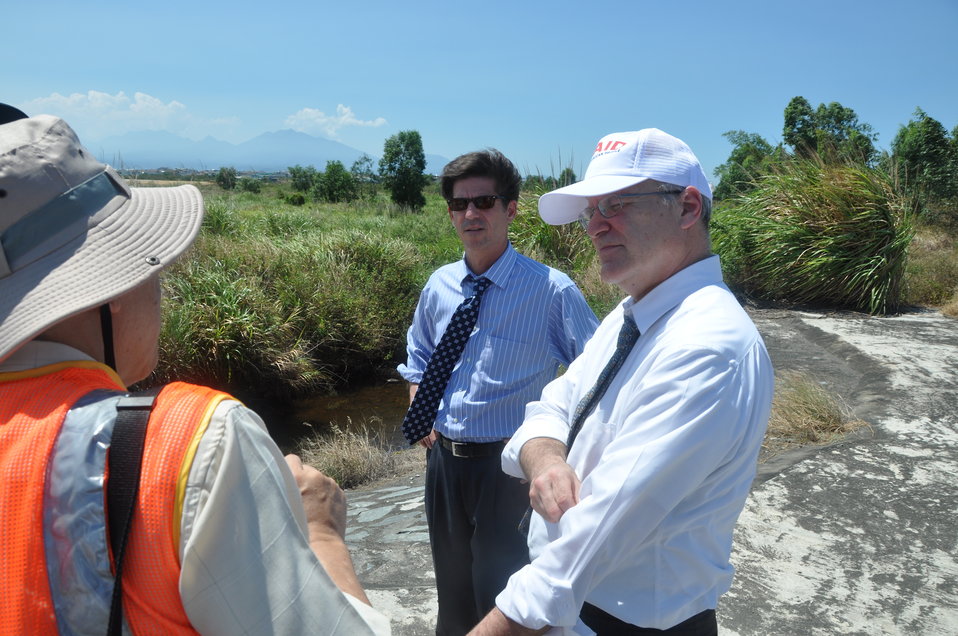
USAID Deputy Administrator Donald Steinberg visits Danang Airport where dioxin remediation project will be conducted

USAID Deputy Administrator Donald Steinberg Visits Vietnam: USAID Photo